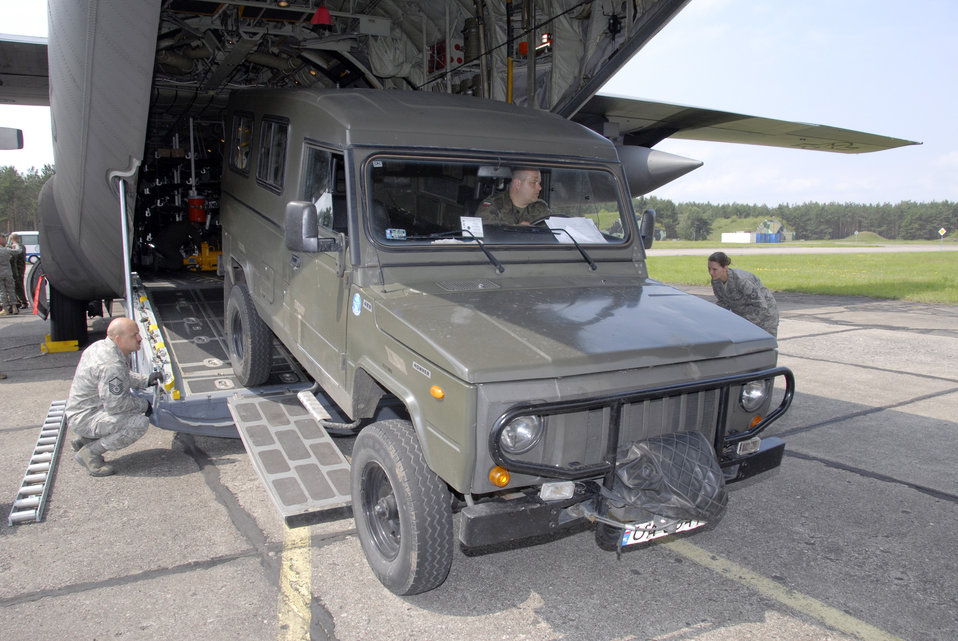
Air National Guard members visits Polish air base

Chief Master Sgt. Rick Barnick discusses options as he and his Polish counterparts prepare to winch a Polish all-terrain vehicle onto a C-130 Hercules June 19 at Powidz, Poland. The 182nd Airlift Wing is in Poland as part of the Illinois Air National Guard's Partnership with the Polish air force under the State Partnership Program. Chief Barnick is the 169th Airlift Squadron chief loadmaster.